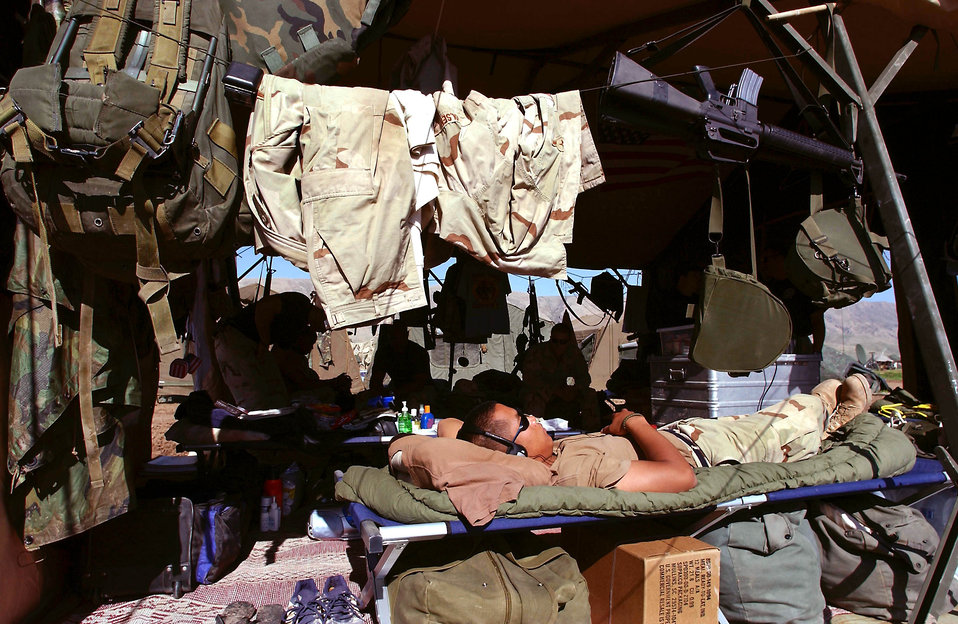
Nap time

OPERATION IRAQI FREEDOM -- Airman Brandon Olsen grabs a snooze before going on call at Bashur Airfield in northern Iraq. A firefighter from Moody Air Force Base, Ga., he deployed to the base to support the 86th Expeditionary Contingency Response Group here.